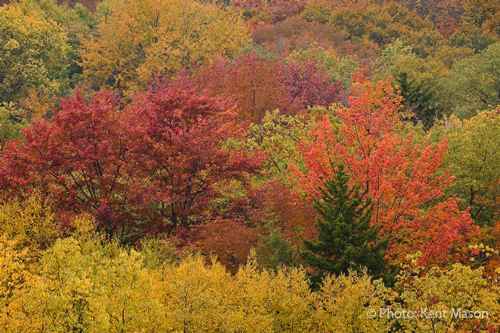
Canaan Valley

Fall patchwork in and around Canaan Valley National Wildife Refuge, WV, by Kent Mason